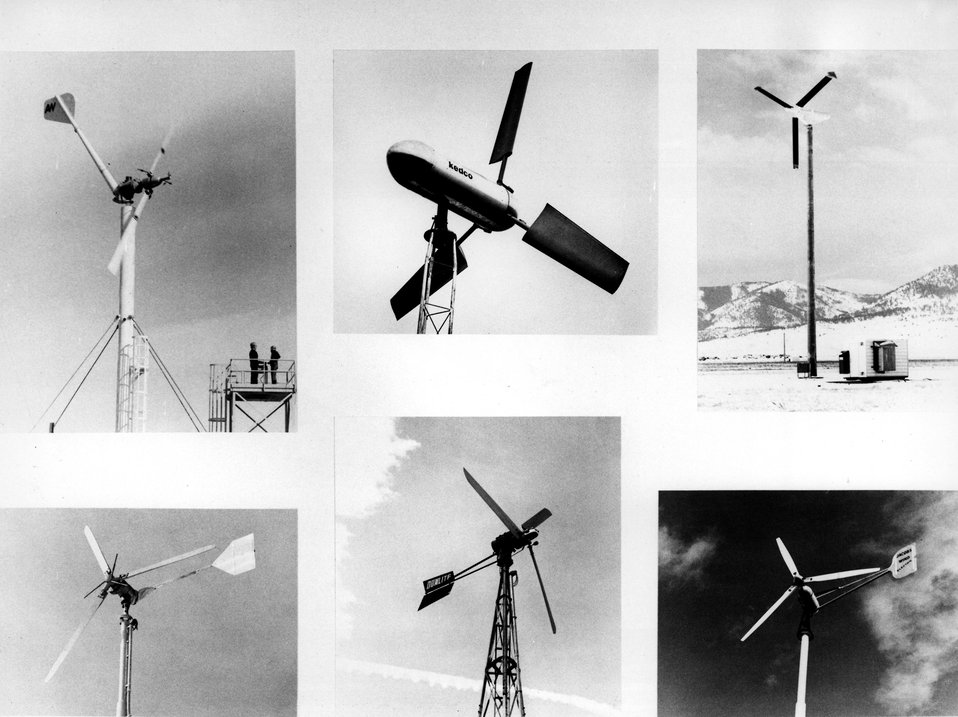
c. 1977